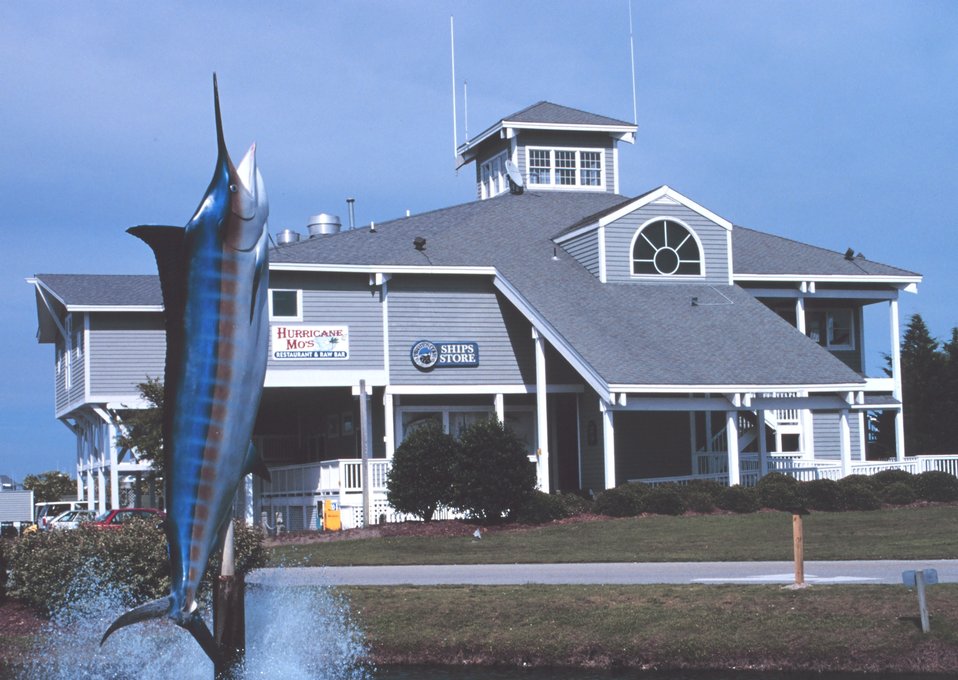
Fish art at Pirate's Cove Marina and home sites